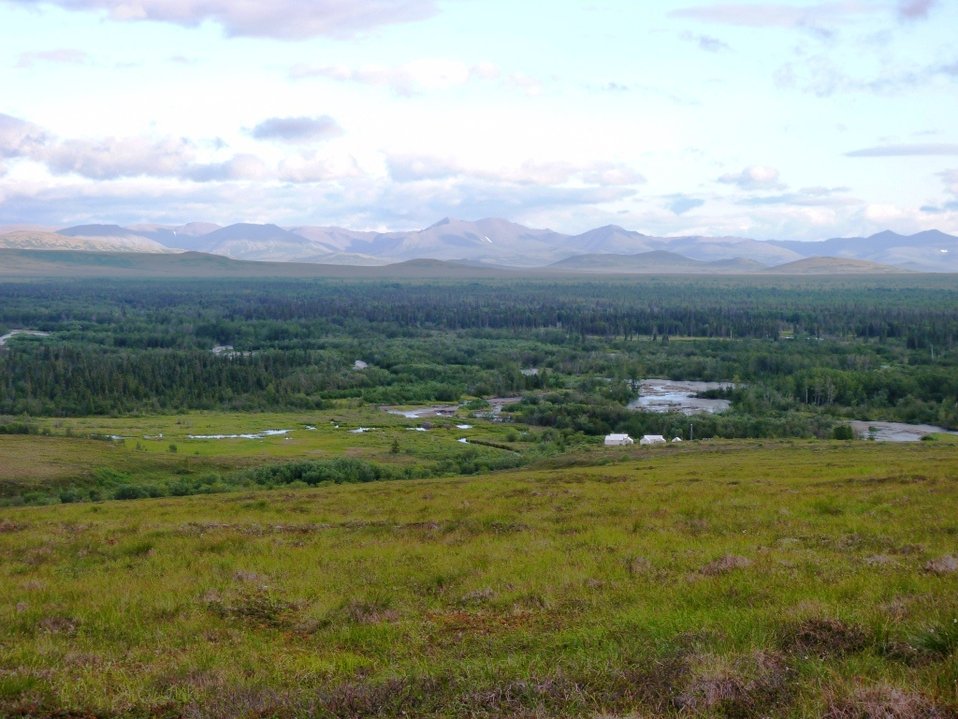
Kwethluk River salmon observatory camp

Kwethluk River Salmon Observatory campsite,
Kwethluk River, Yukon Delta National Wildlife Refuge

Photo credit: Kristine Sowl
USFWS, Yukon Delta National Wildlife Refuge